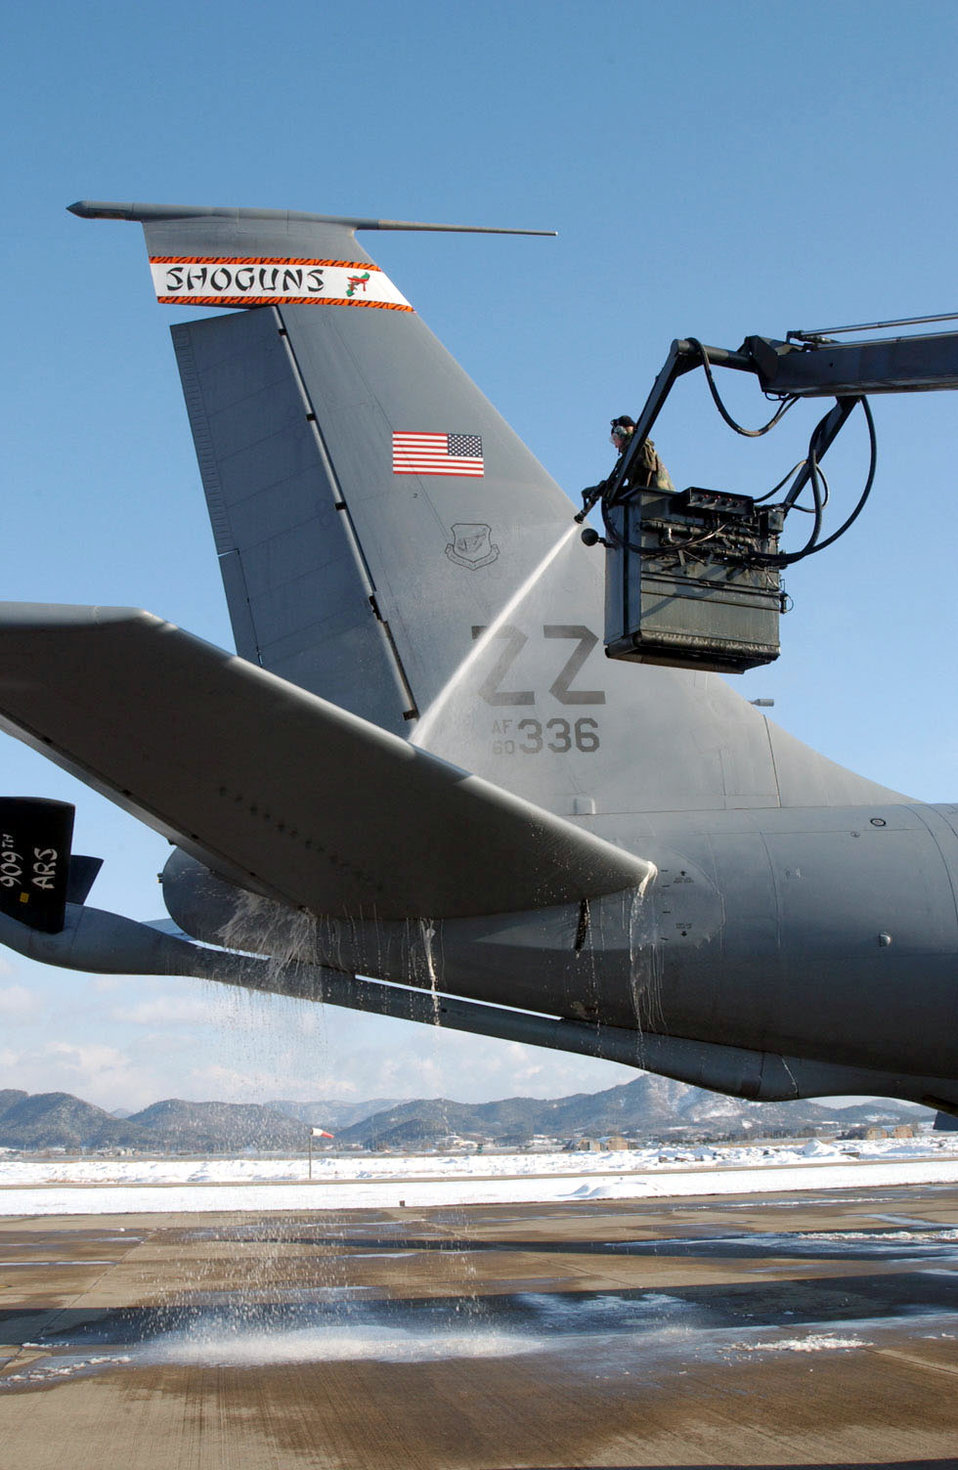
Deploying to snow

KWANG JU AIR BASE, South Korea -- Staff Sgt. John Pflugradt de-ices a KC-135 Stratotanker before takeoff Jan. 25, during a four-day deployment here. Sergeant Pfugradt is a KC-135 crew chief assigned to the 718th Aircraft Maintenance Squadron at Kadena Air Base, Japan.